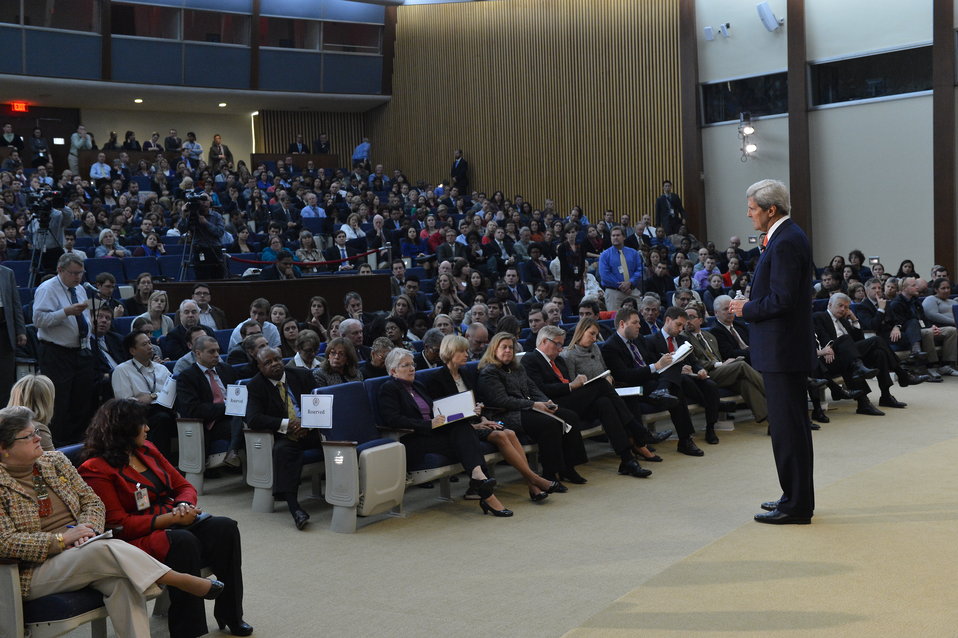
Secretary Kerry Listens to a Question From a State Department Employee

U.S. Secretary of State John Kerry responds to questions from employees during a town hall at the U.S. Department of State in Washington, D.C., on October 28, 2013.